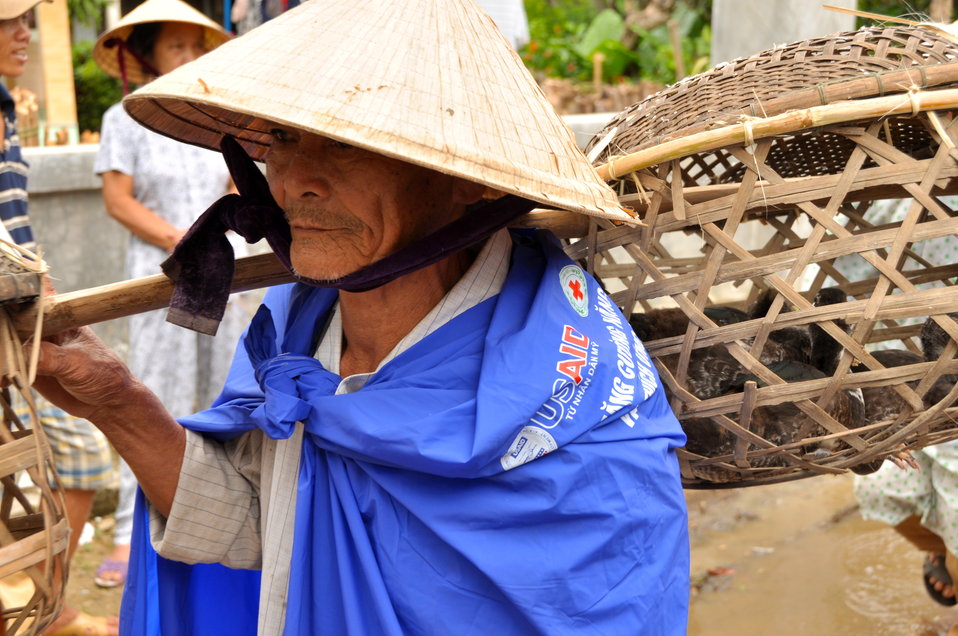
USAID and Save the Children support community evacuation drill and emergency preparedness in central Vietnam

Loc An Commune, Phu Loc District, Thua Thien Hue Province
December 4, 2012, Photo: Richard Nyberg, @USAIDVietnam